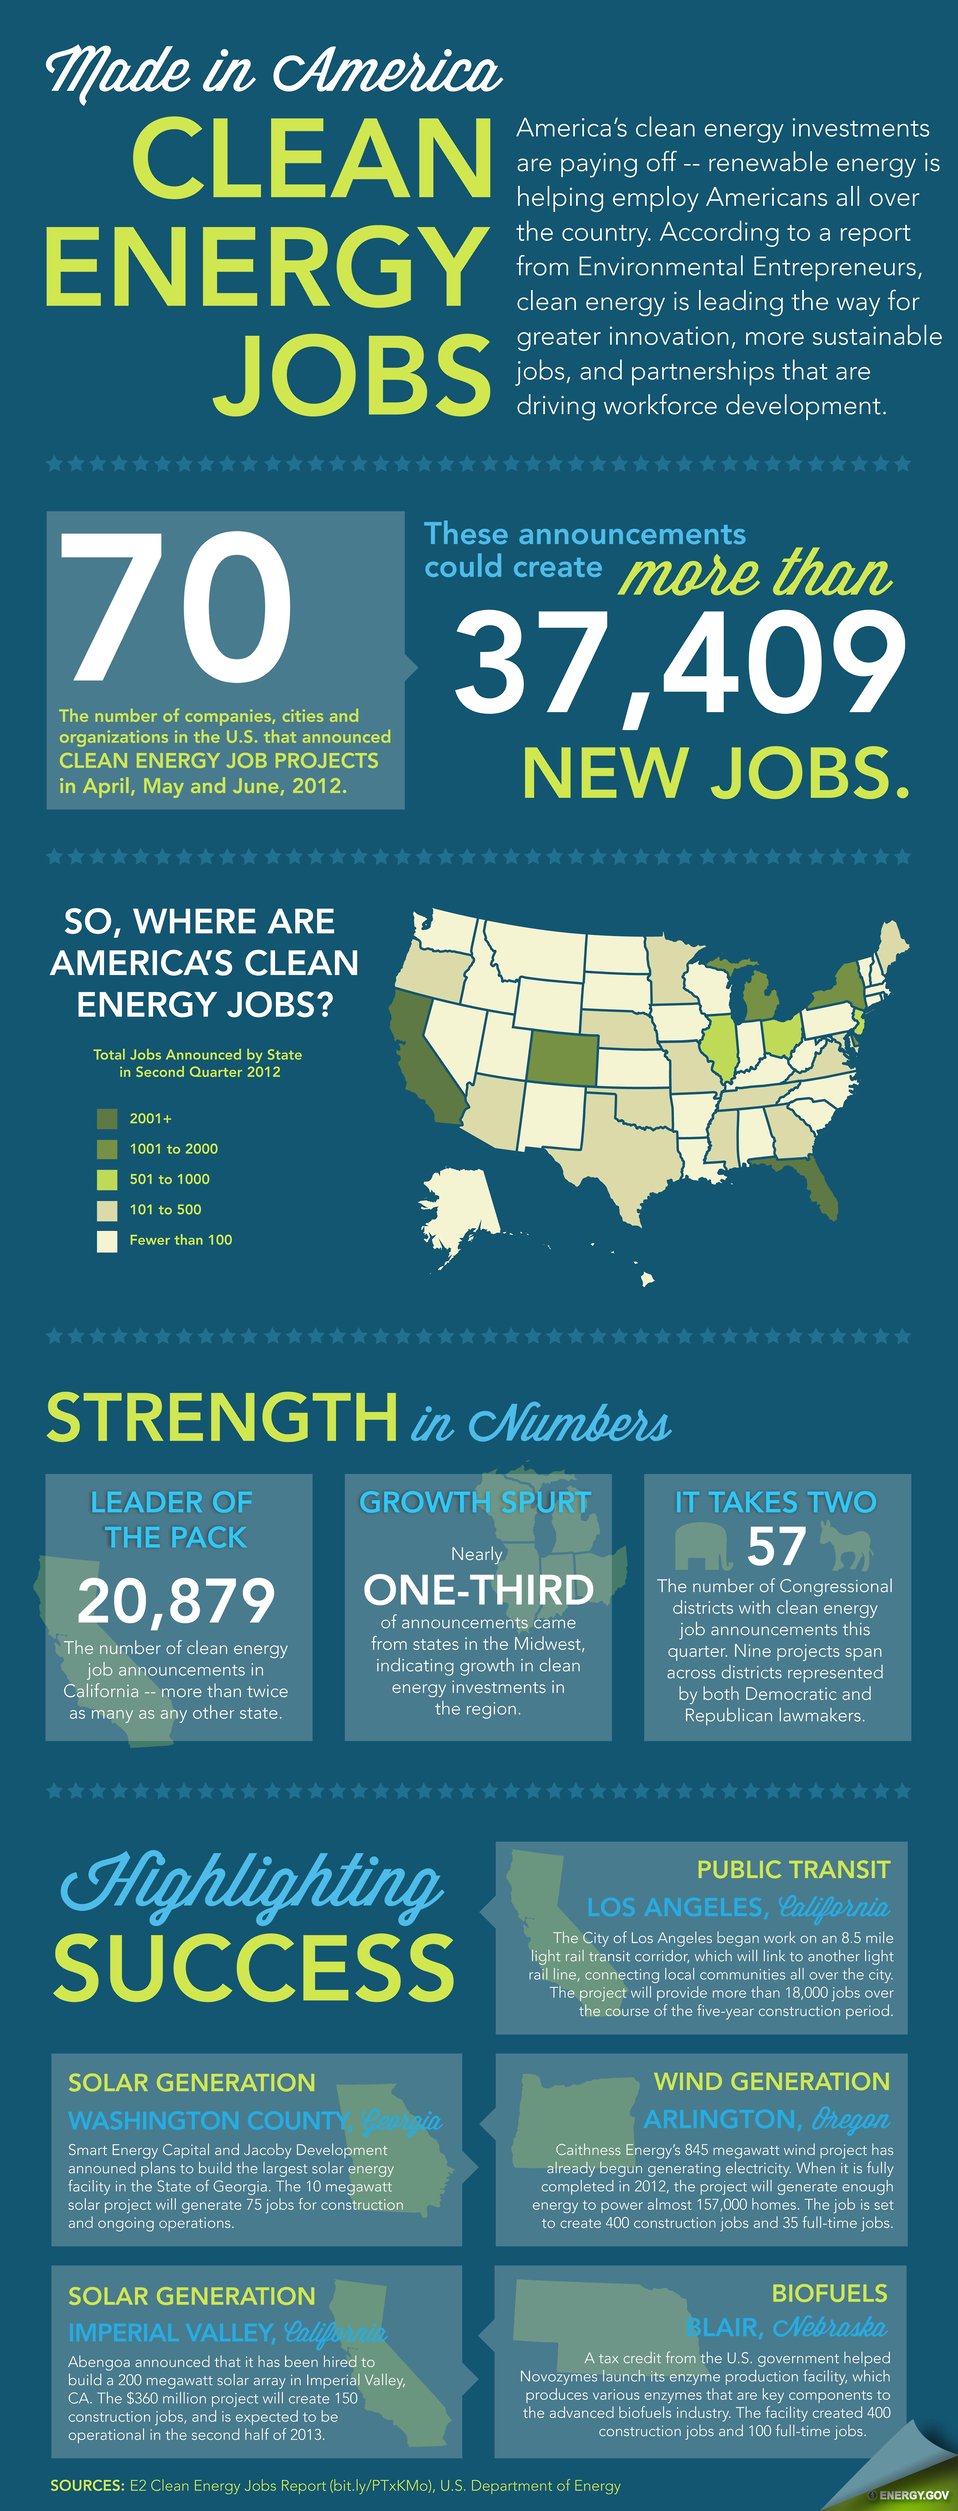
MadeInAmerica